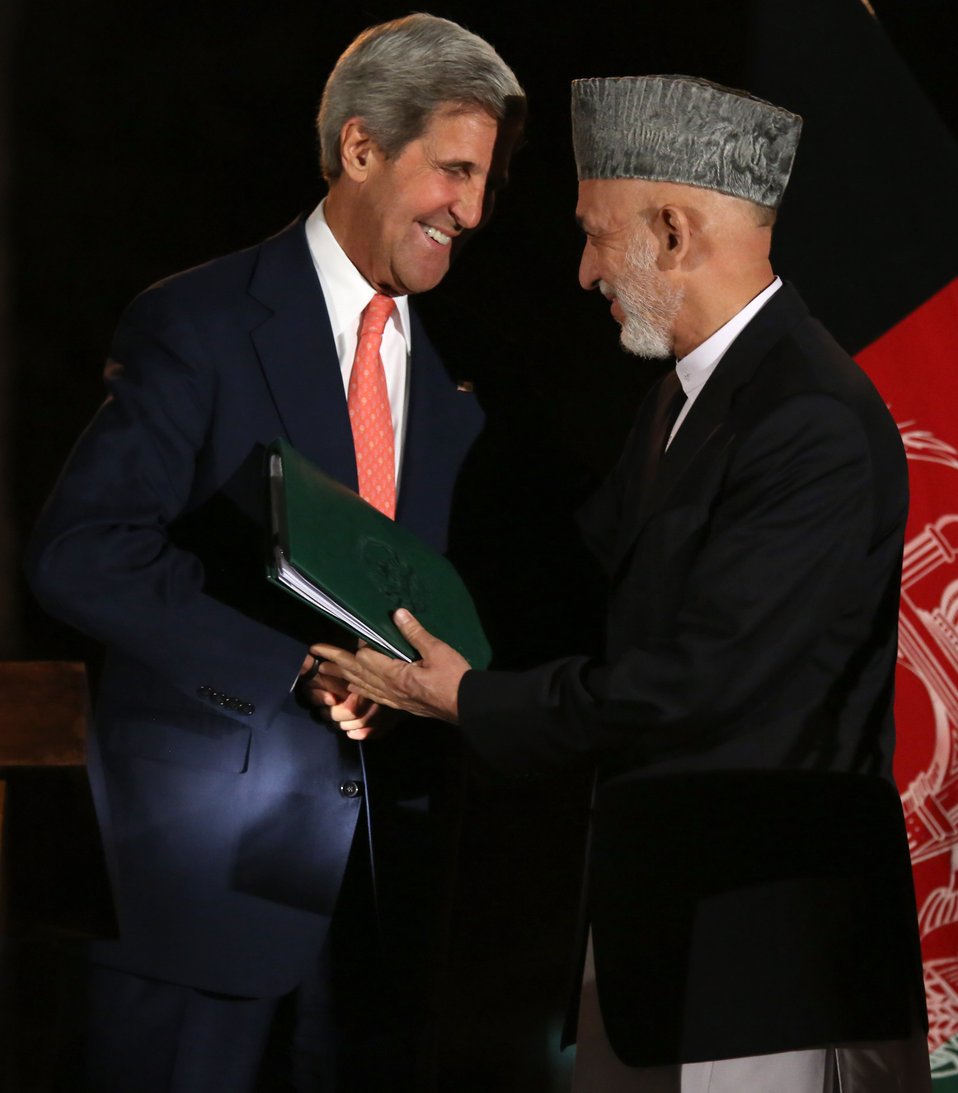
Secretary Kerry Discusses Bilateral Security Agreement With Afghanistan

U.S. Secretary of State John Kerry shakes hands with Afghan President Hamid Karzai after concluding a press conference at the Presidential Palace on Saturday, October 12, 2013 in Kabul. Kerry and Karzai held talks on the bilateral security agreement.